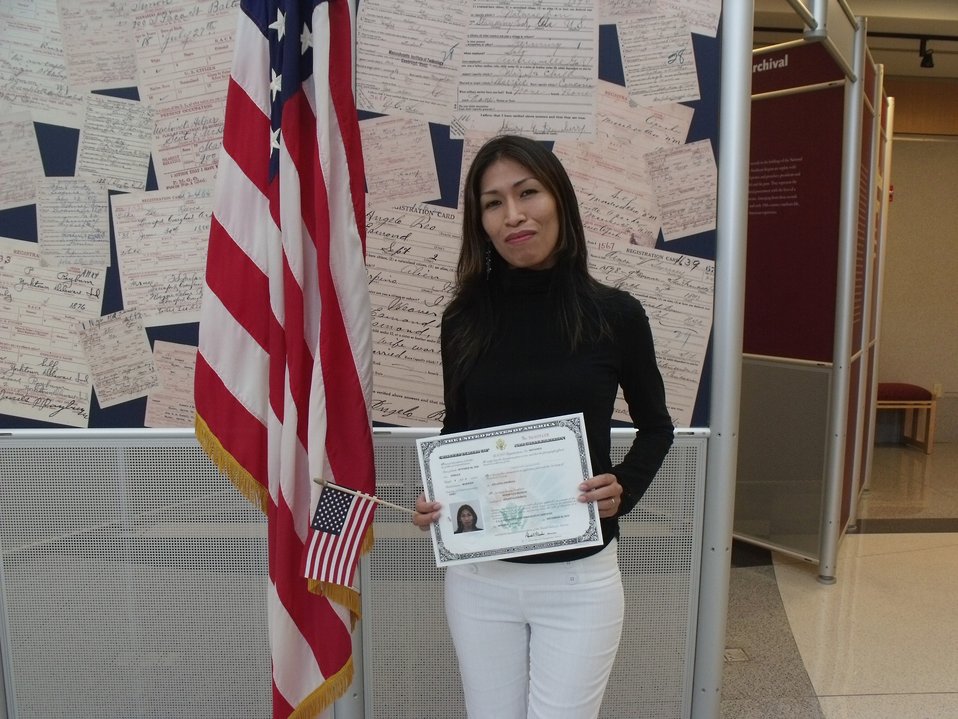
New Citizens